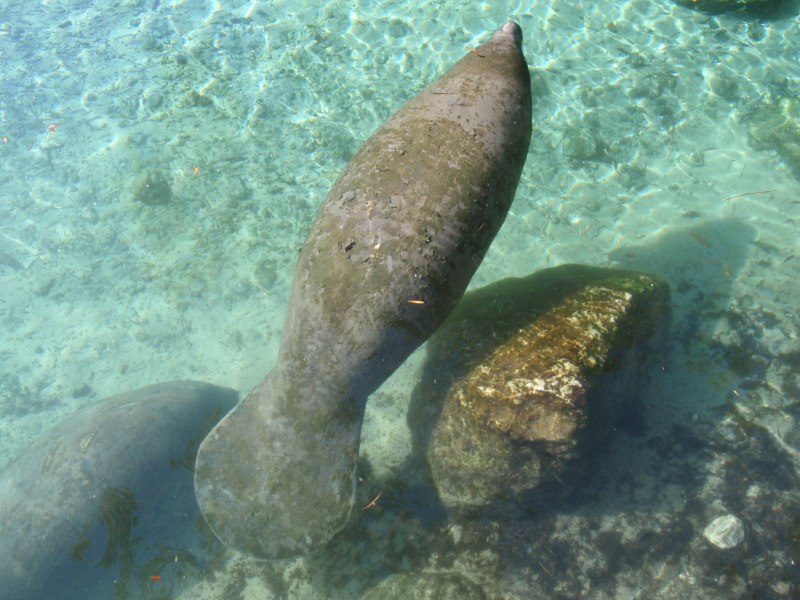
Endangered Florida manatee (Trichechus manatus)

Photo credit: Tracy Colson

The Crystal River National Wildlife Refuge, was established in 1983 specifically for the protection of the endangered West Indian Manatee. This unique refuge preserves the last unspoiled and undeveloped habitat in Kings Bay, which forms the headwaters of the Crystal River. The refuge preserves the warm water spring havens, which provide critical habitat for the manatee populations that migrate here each winter.